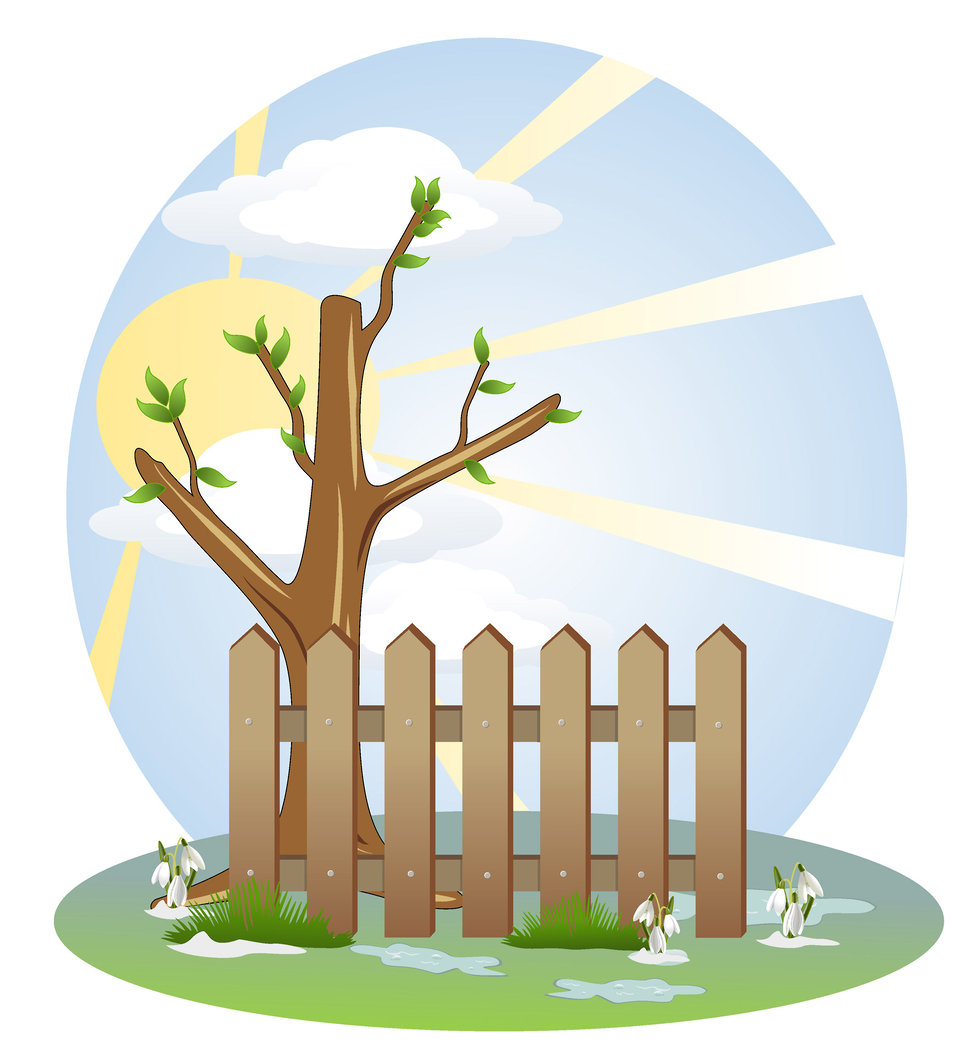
Vector background

Abstract vector background "seasons".